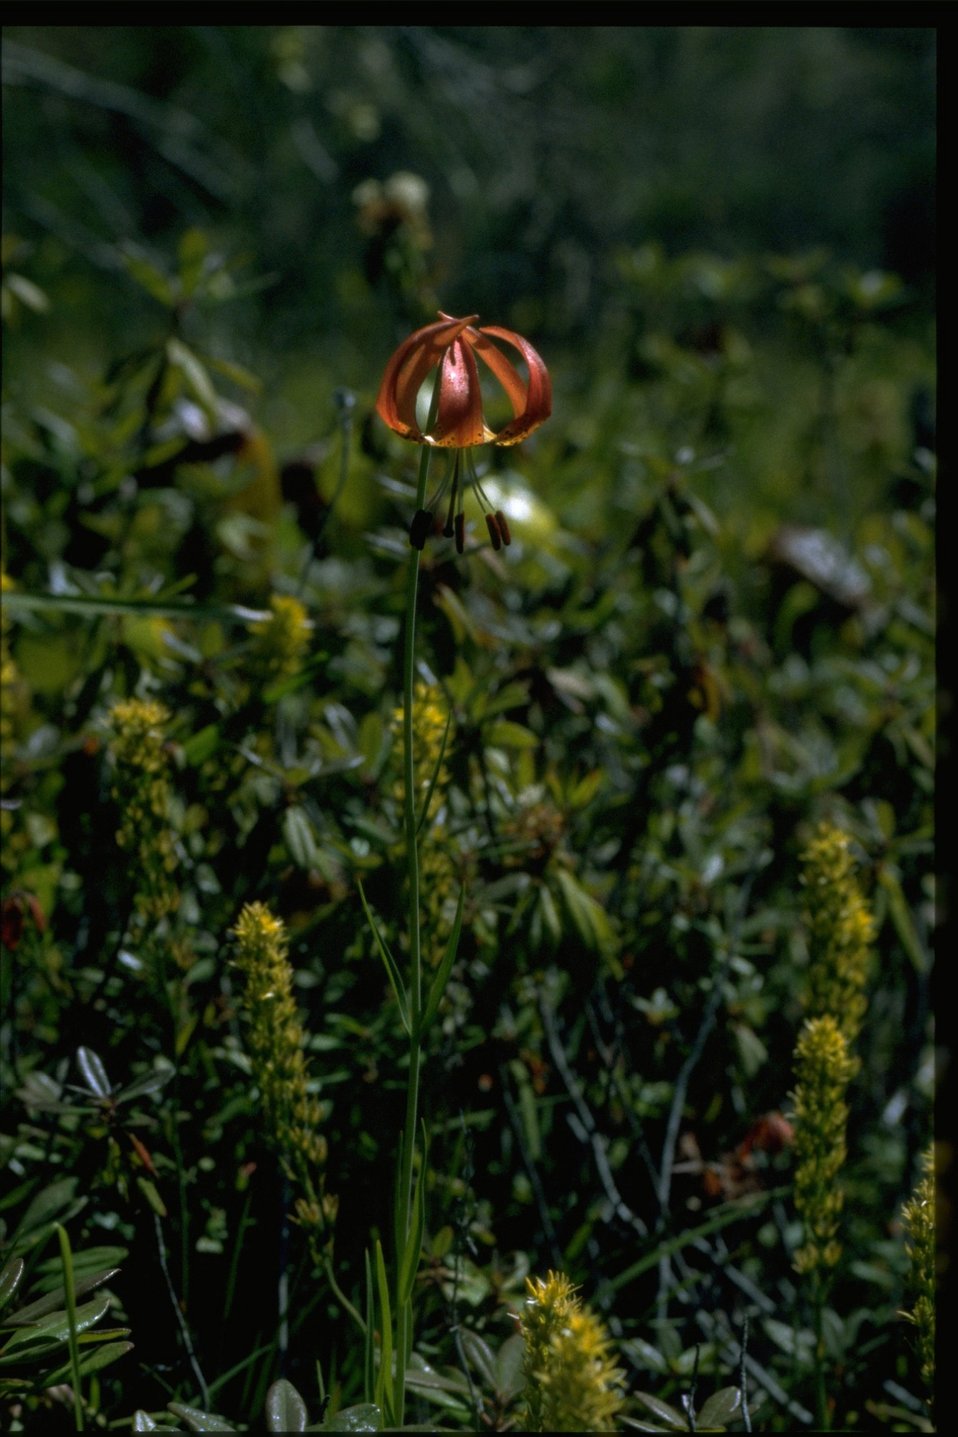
Medium shot of Lilium pardalinum var vollmeri.